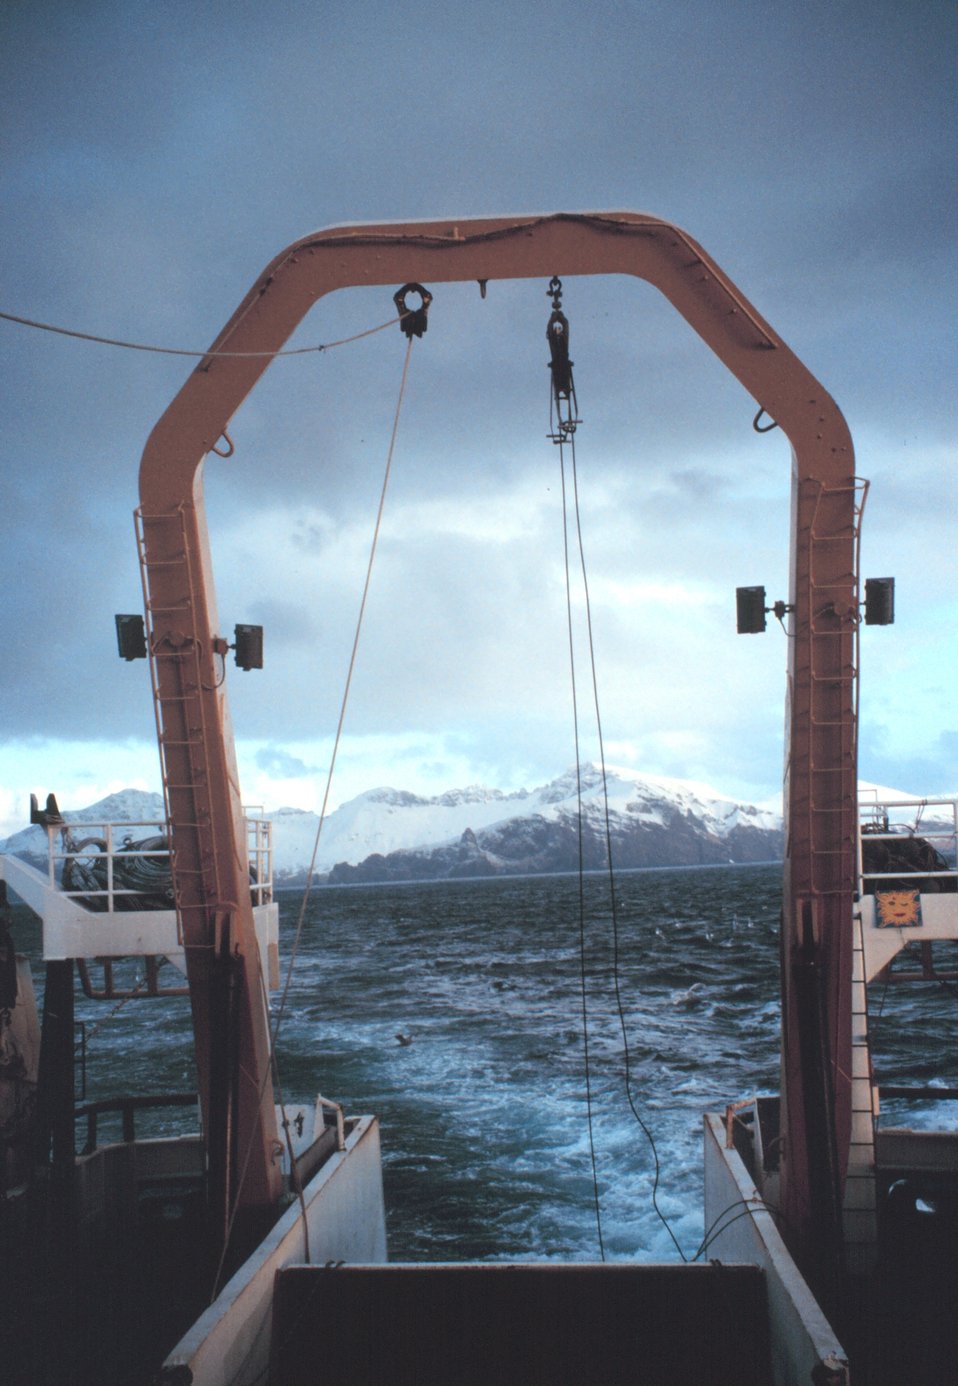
Winter cruising in the Aleutian Islands